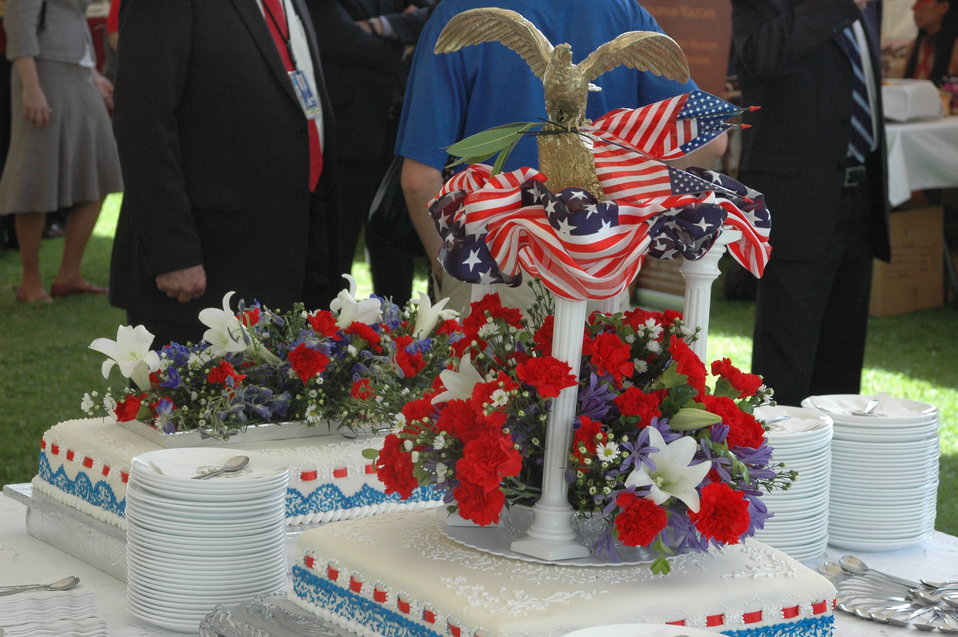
July 4th Celebration at U.S. Embassy in Ecuador

The patriotic cake is on display at the U.S. Independence Day celebration in Quito, Ecuador, on July 2, 2010.